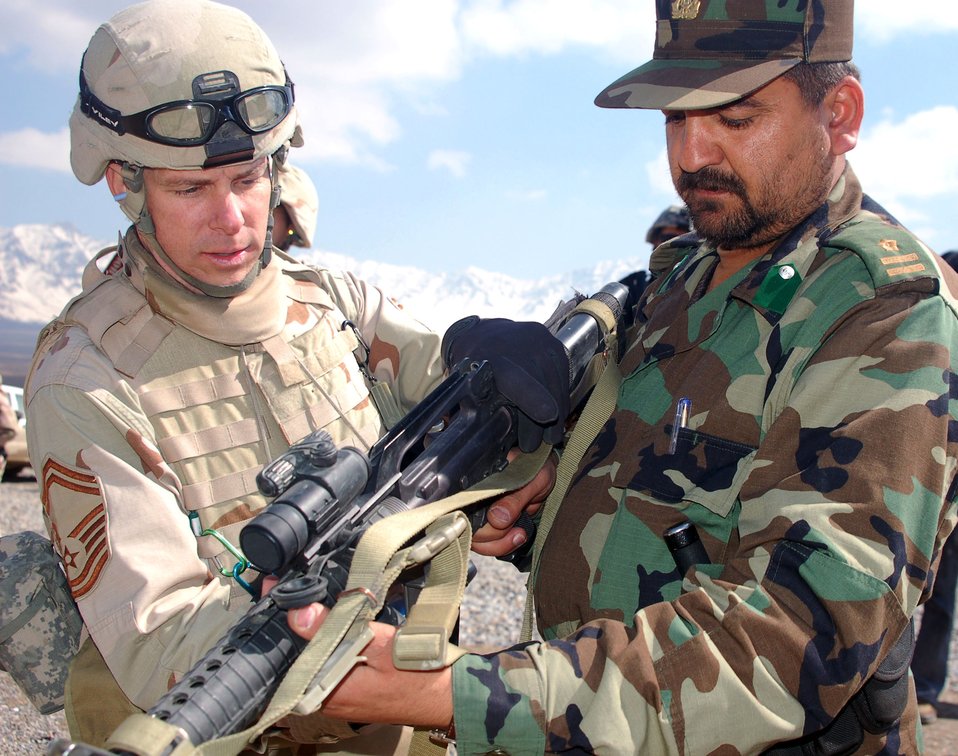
Sharing his knowledge

Senior Master Sgt. Robert Spaulding shows Afghan National Army Capt. Abdul Rahman, the mechanics of an M-16 and how to view the target through the optical scope March 14. Sergeant Spaulding is deployed from the 4th Logistics Readiness Squadron at Seymour-Johnson Air Force Base, N.C.